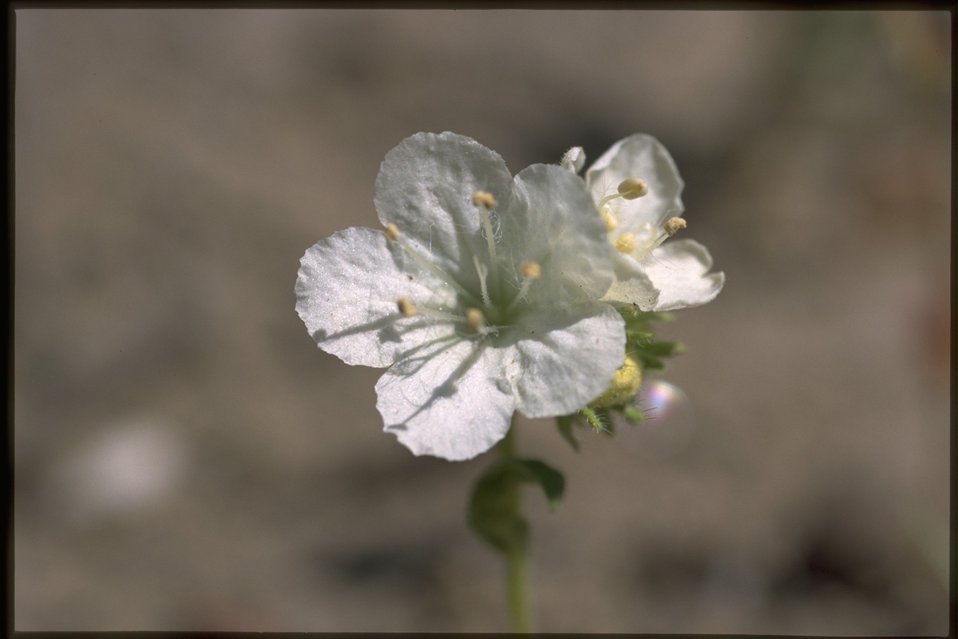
Medium shot of unidentified wildflower.